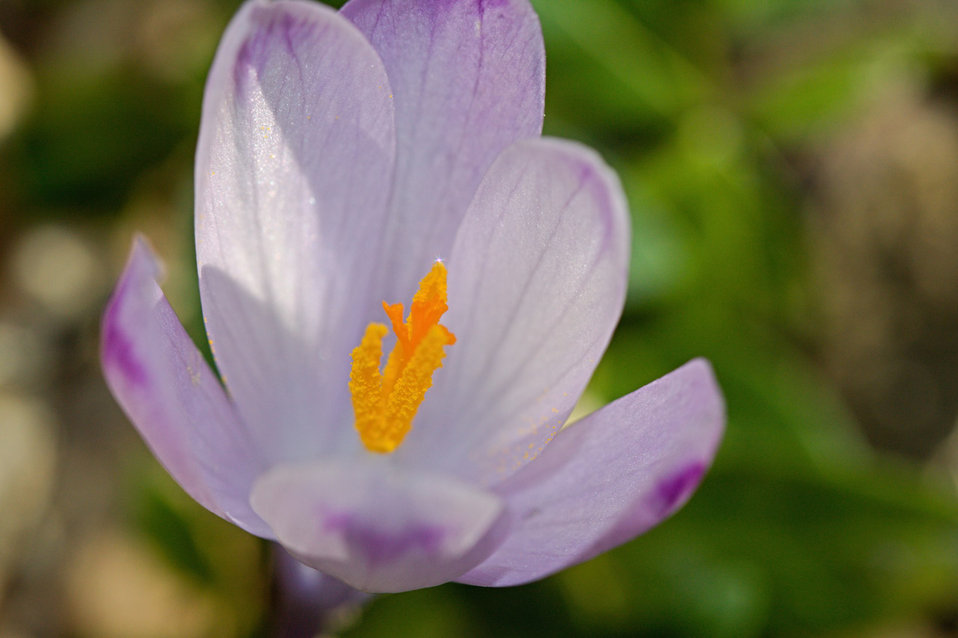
Spring saffron

Beautifull spring saffron - macro.